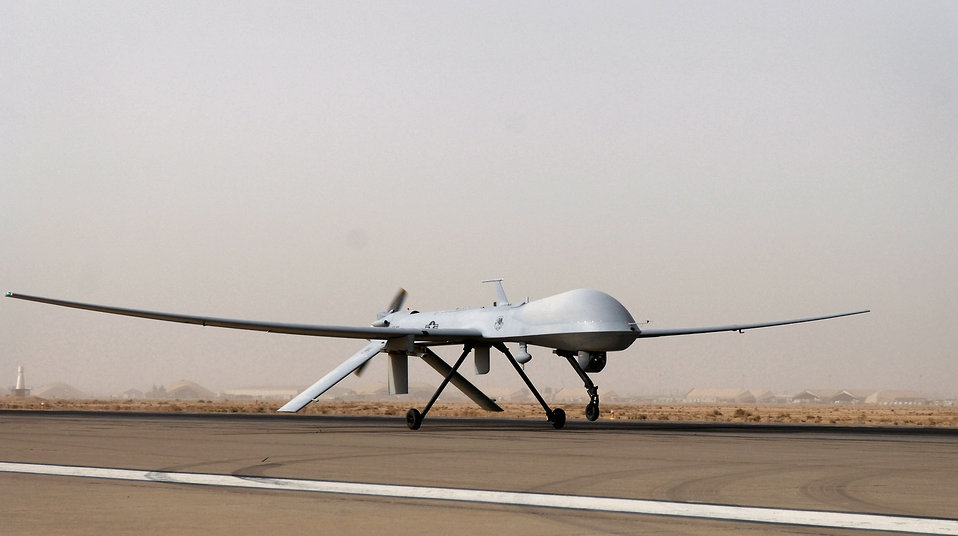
March 3 airpower summary: Predator keeps vigilant watch

An MQ-1 Predator unmanned aircraft prepares for take off in support of operations in Southwest Asia. The Predator is a medium-altitude, long-endurance, remotely piloted aircraft that conducts armed reconnaissance against critical targets.